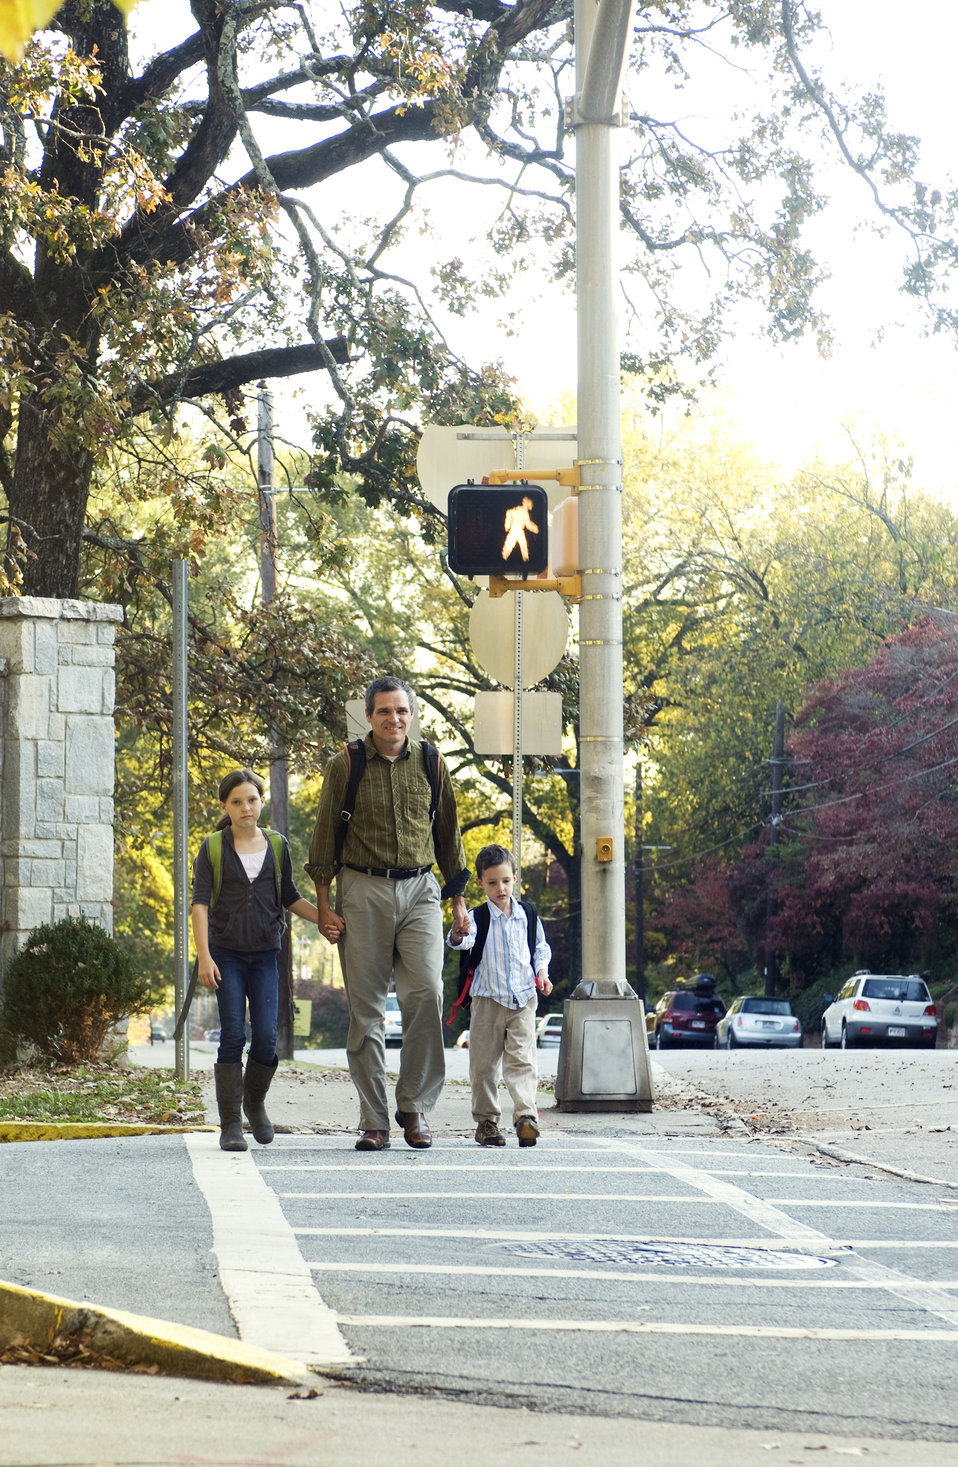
This father was shown walking on a Georgian city street, while holding hands with his two young children, his son to his left, and his daughter to his right. Having been given the green light to walk after pausing on the far side of the street, the three had entered the intersection, crossing inside a designated crosswalk. Adherence to the rules and regulations governing our roadways, as well as staying alert and focused on the activities taking place all around you, will make for a much safer walking experience, especially on a city street.